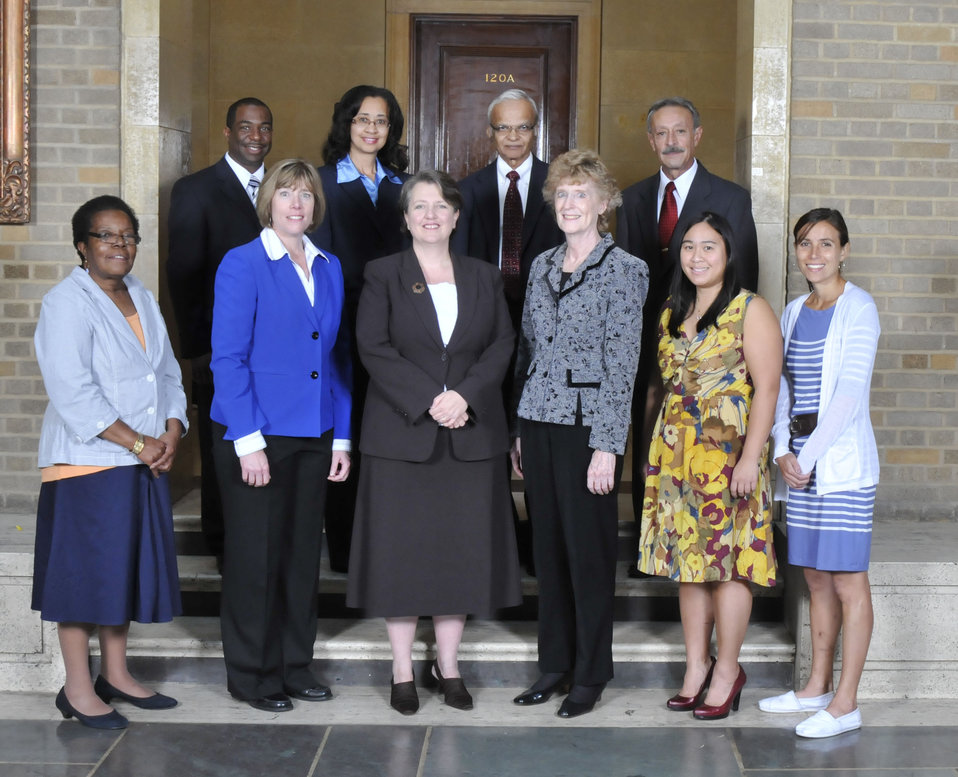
USDA Foods Nutrition Initiative. Food and Nutrition Service, Alexandria, VA. Janet El Tenney and Laura L. Walter, Group Leaders. For Improving the nutritional quality of USDA foods by significantly reducing fat and sodium content. On September 14, 2011 in the patio of the Whitten Building Patio of the US Department of Agriculture in Washington, DC.